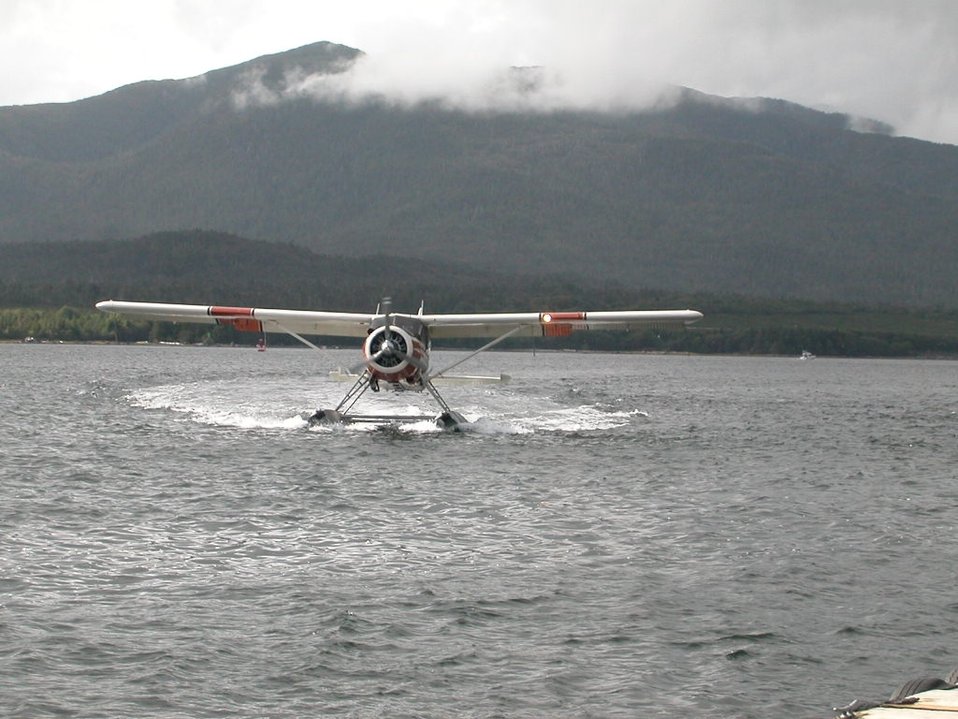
A float plane at Ketchikan.